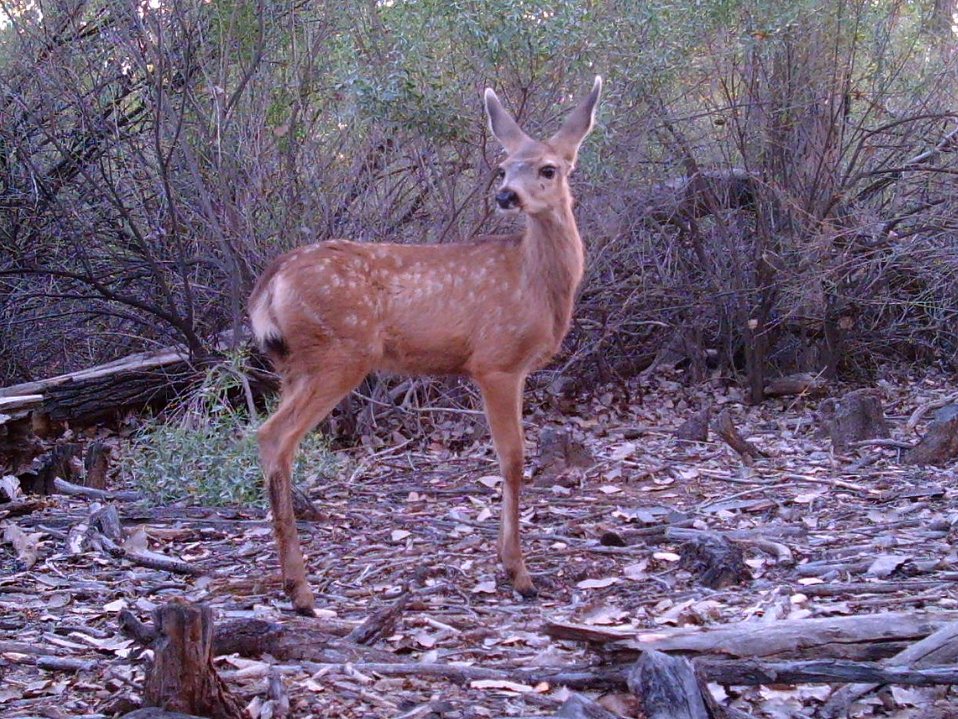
mule deer fawn

Bosque del Apache National Wildlife Refuge, NM
Camera trap project by Matthew Farley, Jennifer Miyashiro and James Stuart
Photo made available by J.N. Stuart, Creative Commons